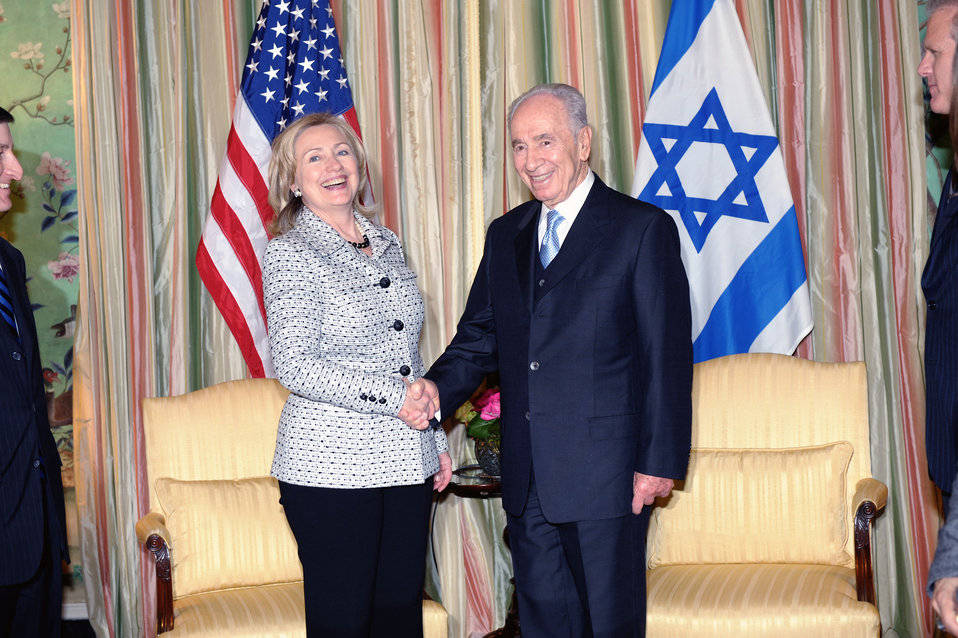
Secretary Clinton Shakes Hands With Israeli President Peres

U.S. Secretary of State Hillary Rodham Clinton shakes hands with Israeli President Shimon Peres at the Blair House in Washington, D.C., on April 4, 2011.